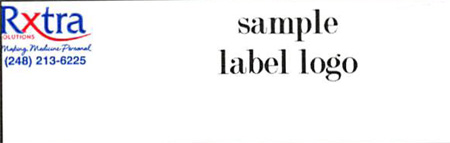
RECALLED – Sterile Injectable

July 31, 2013 – Product Recall – Beacon Hill Pharmacy d/b/a Rxtra Solutions Issues Voluntary Nationwide Recall of Certain Sterile Products Due to a Question of Sterility Assurance.